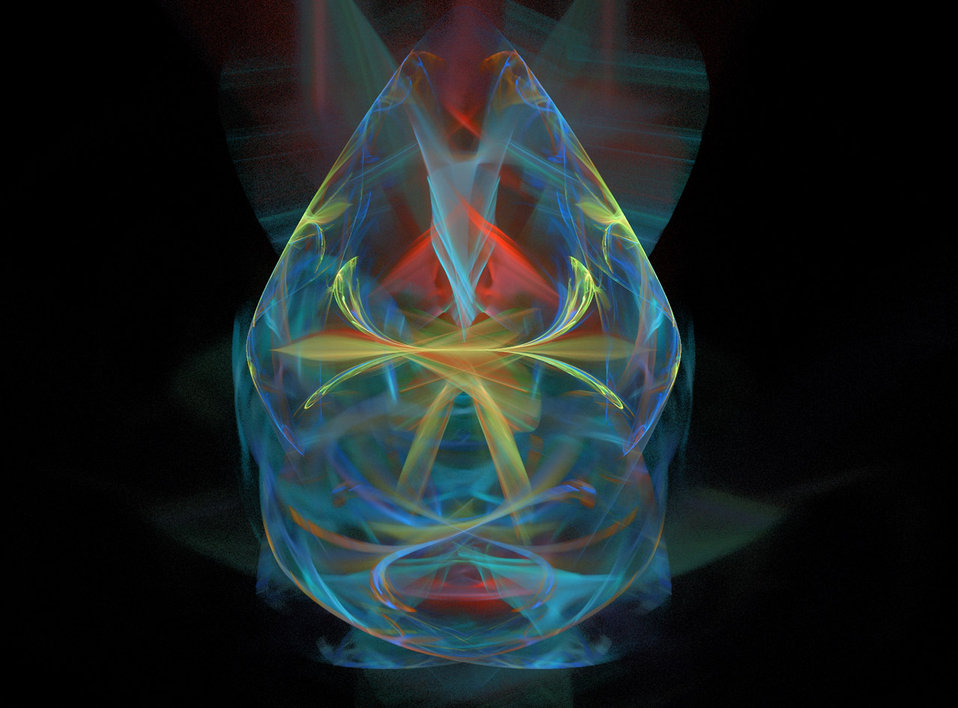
Blue and other colours fractal.